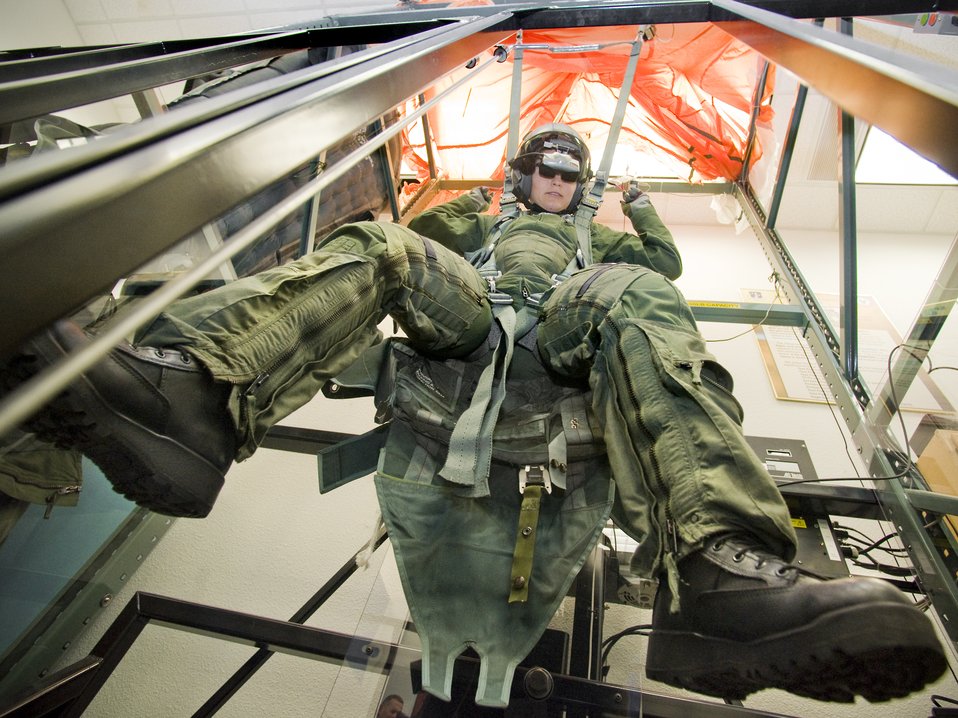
Look out Below

Staff Sgt Desiree Palacios steers her flight in a hanging harness virtual reality parachute training system during an egress training session. Sgt. Palacios is an aerial photojournalist with Defense Media Activity-San Antonio, San Antonio, TX. A nearby computer sends an interactive video image onto her visor monitor. She looks down and steers herself to a virtual aircraft carrier below her.